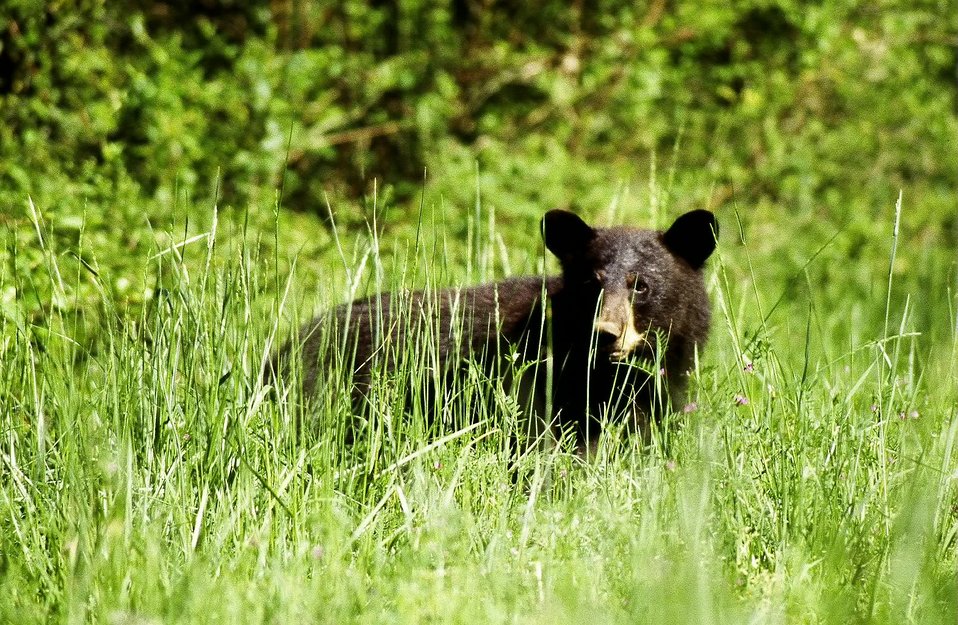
Black bear

Great Dismal Swamp National Wildlife Refuge.